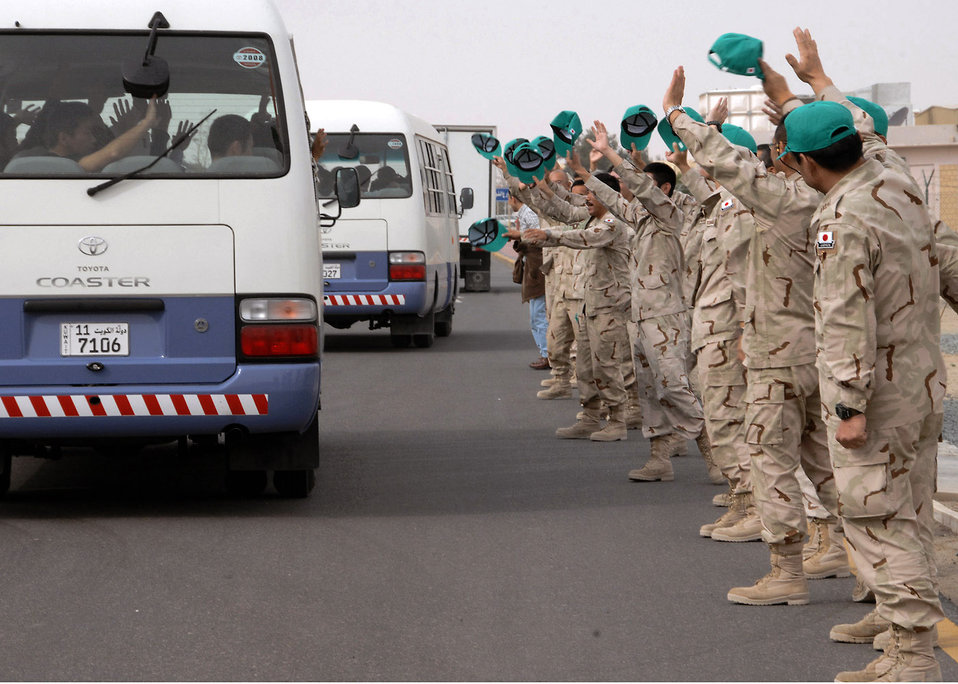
JASDF Redeplyoyment Group bids final farewell

Airmen from the Japanese Air Self Defense Force redeployment group wave goodbye as their comrades are bused to the local airport for their flights back to Japan at an air base in Southwest Asia Feb. 10. For almost five years, more than 3,600 Japanese airmen have been part of the JASDF contingent.